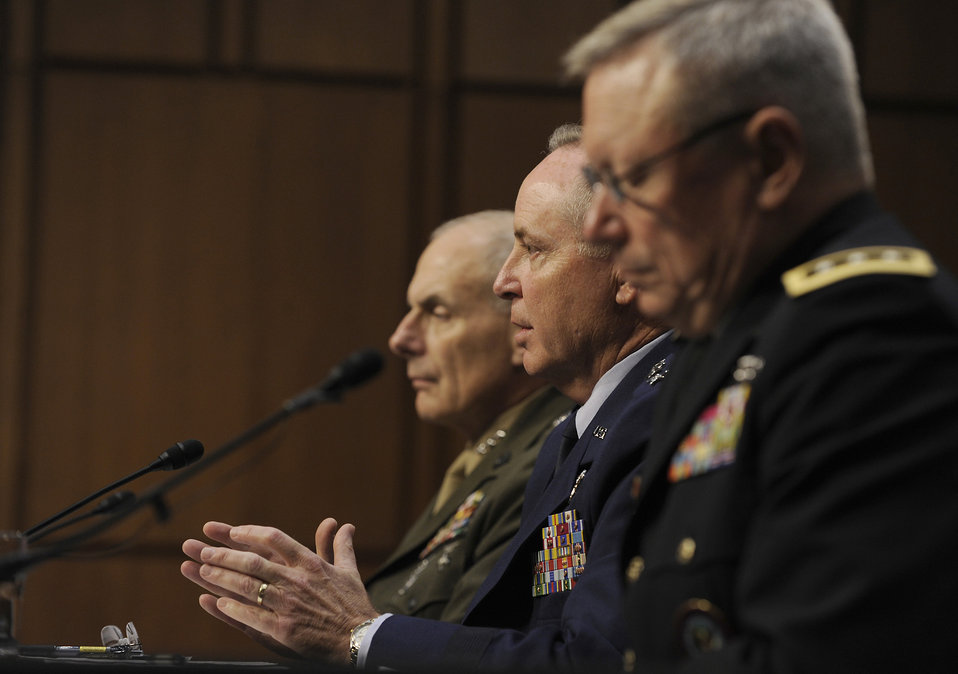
CSAF nominee

Gen. Mark A. Welsh III, the commander of U.S. Air Forces in Europe, testifies before the Senate Armed Services Committee in Washington, D.C., on July 19, 2012, as part of the confirmation process to serve as the 20th Air Force Chief of Staff. If confirmed, Welsh will replace Gen. Norton Schwartz, who retires Aug. 10. Additional witnesses before the committee were Lt. Gen. John F. Kelly, U.S. Marine Corps, who is nominated to the rank of general and to take command of U.S. Southern Command, and Lt. Gen. Frank Grass, Army National Guard, also nominated for the rank of general and for appointment as the Chief of the National Guard Bureau.